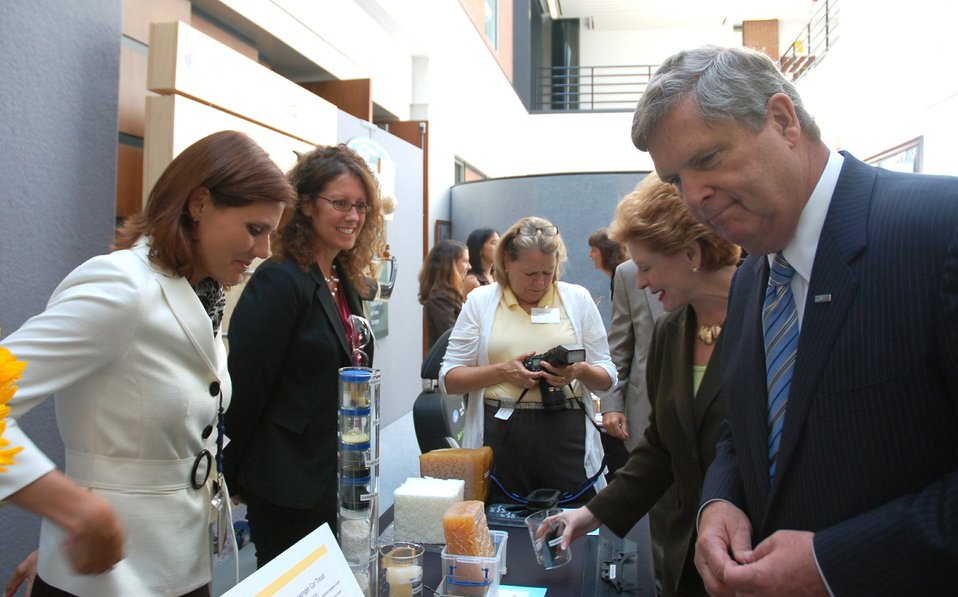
Agriculture Secretary Tom Vilsack (right) and Michigan Senator Debbie Stabenow (center right) look over a display of bio-based products at the Ford Plant in Dearborne, MI on Tuesday, August 7, 2012. Secretary Vilsack was in Michigan to discuss statewide economic growth opportunities in the bio-based manufacturing industry in Michigan.